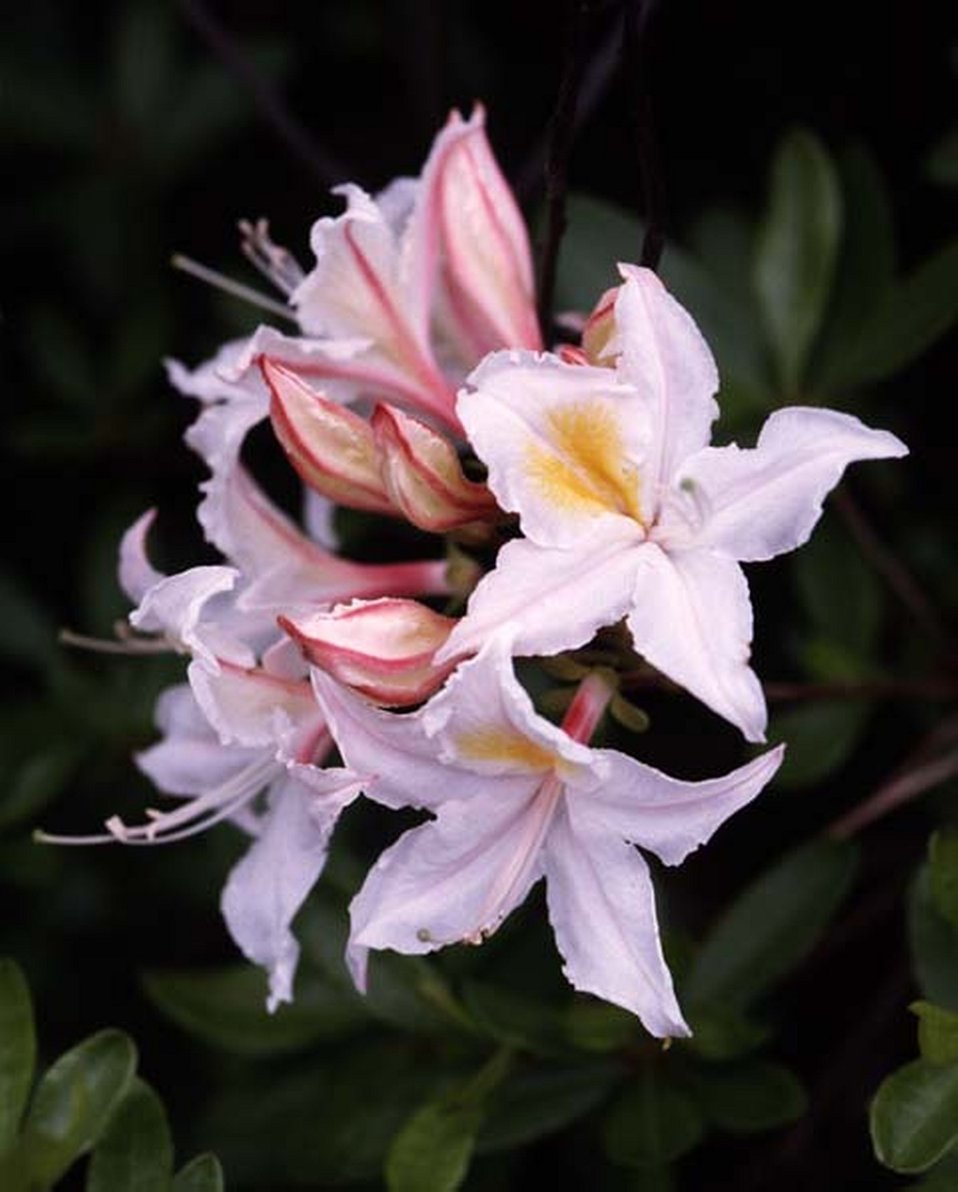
Closeup shot of Rhododendron.